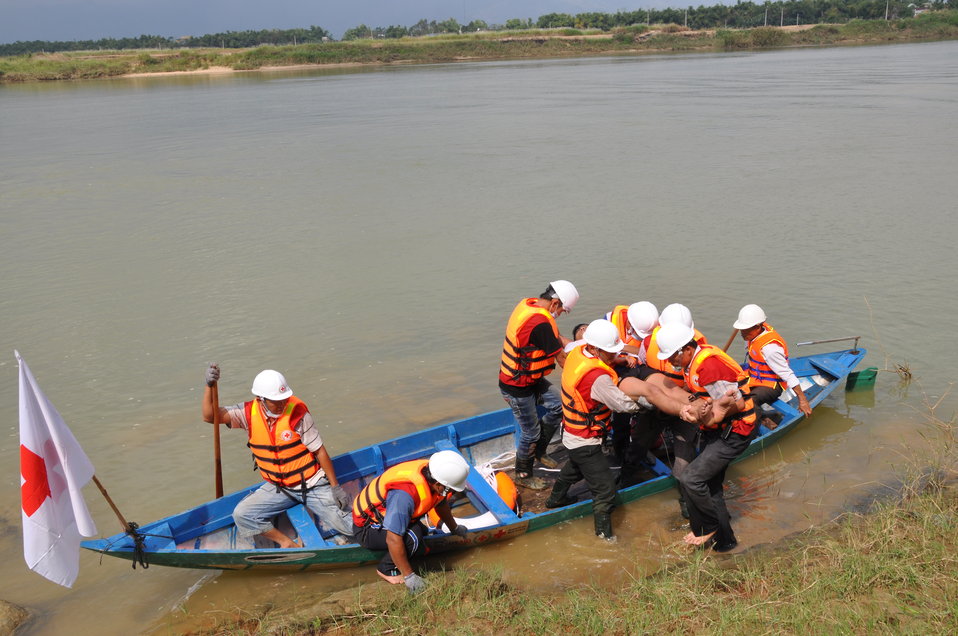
USAID, Red Cross Support Disaster Response Drill in Duy Hoa Commune, Quang Nam Province

Duy Hoa Commune, Quang Nam Province
December 5, 2012